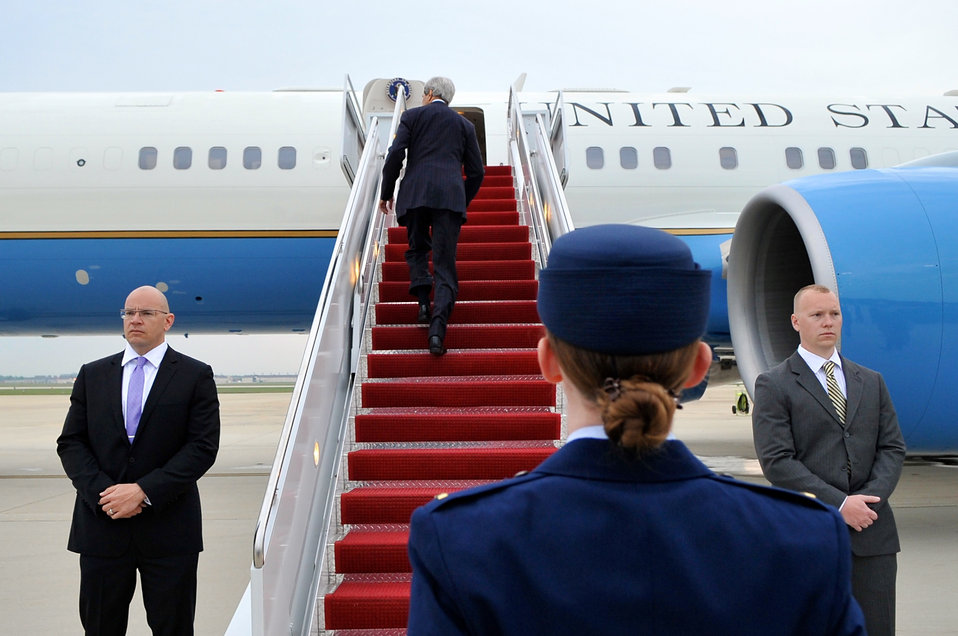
Secretary Kerry Boards Airplane For Flight to Mexico City

U.S. Secretary of State John Kerry boards an Air Force jet on May 21, 2014, for a flight to Mexico City and a day of meetings with Mexican government and business leaders.